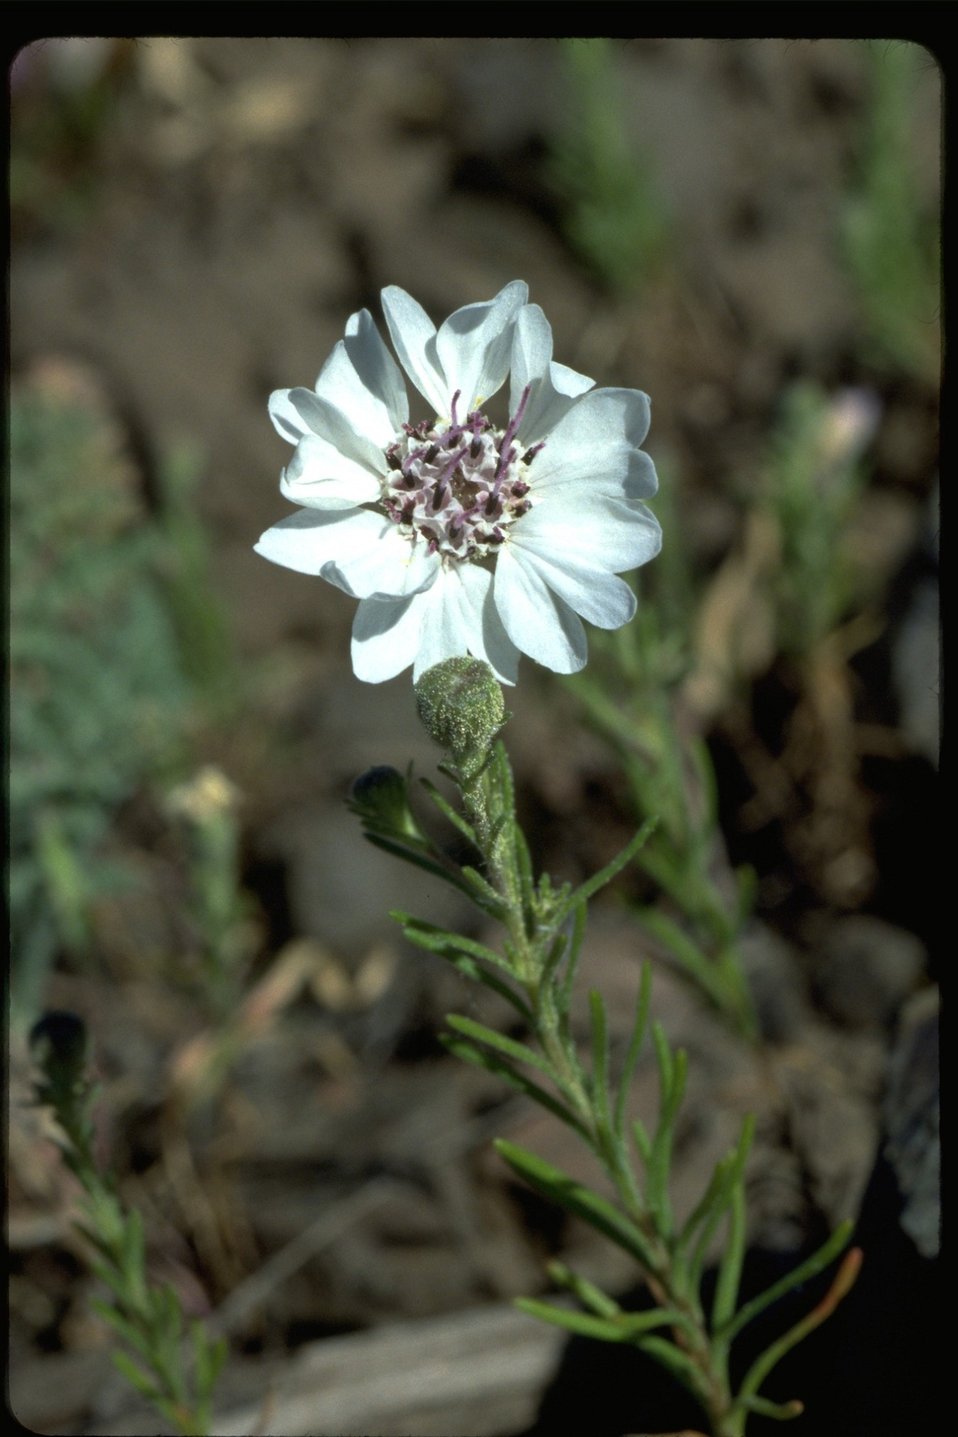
Medium shot of wild onion.